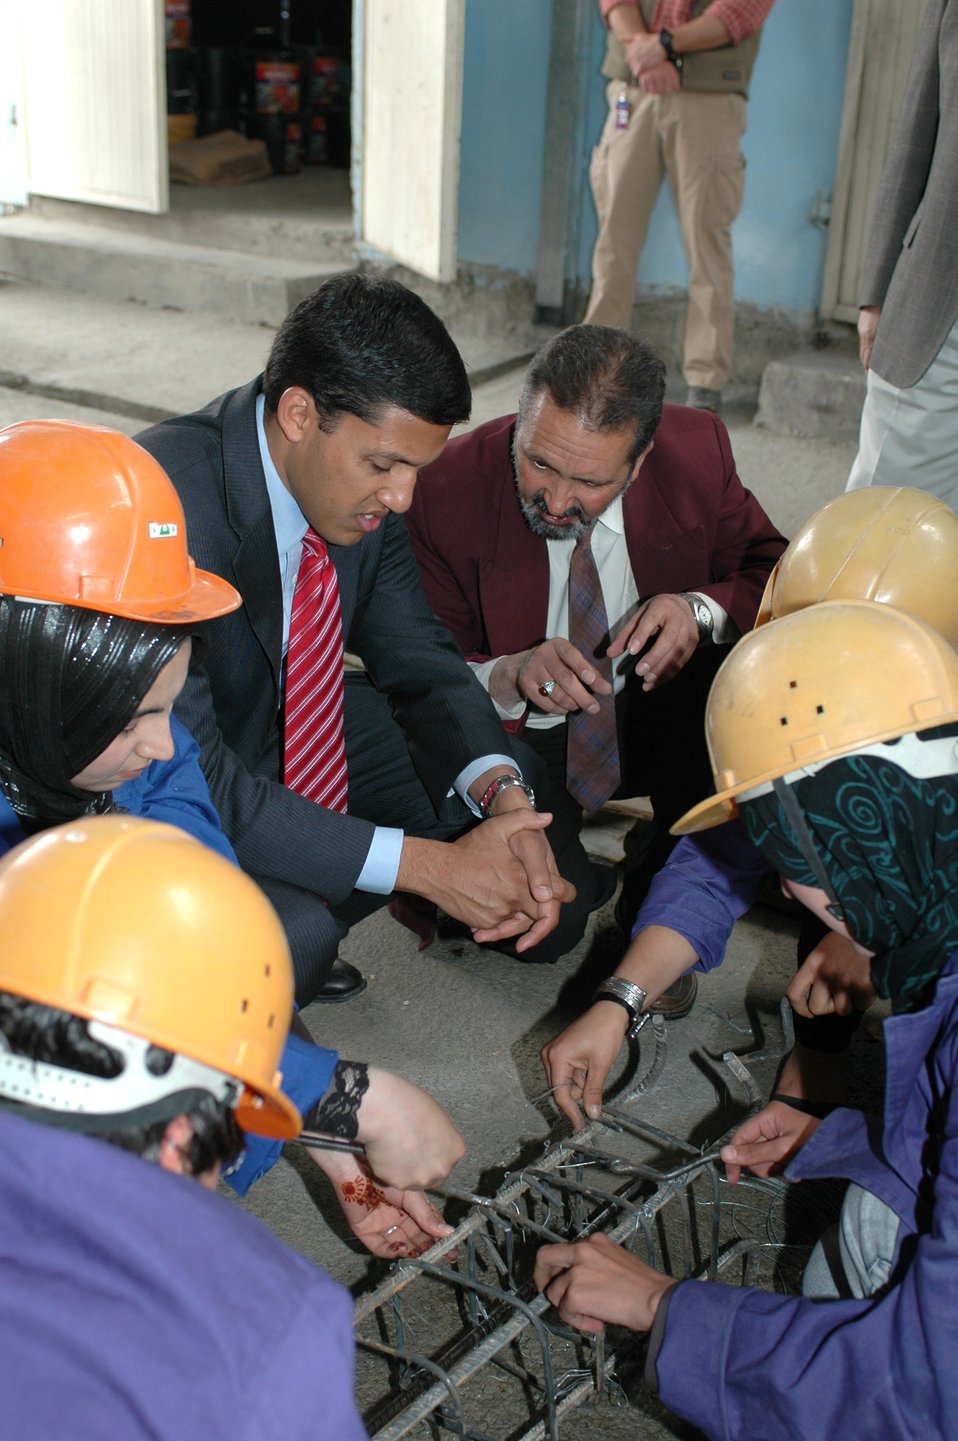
Dr Shah Visits Votech in Kabul